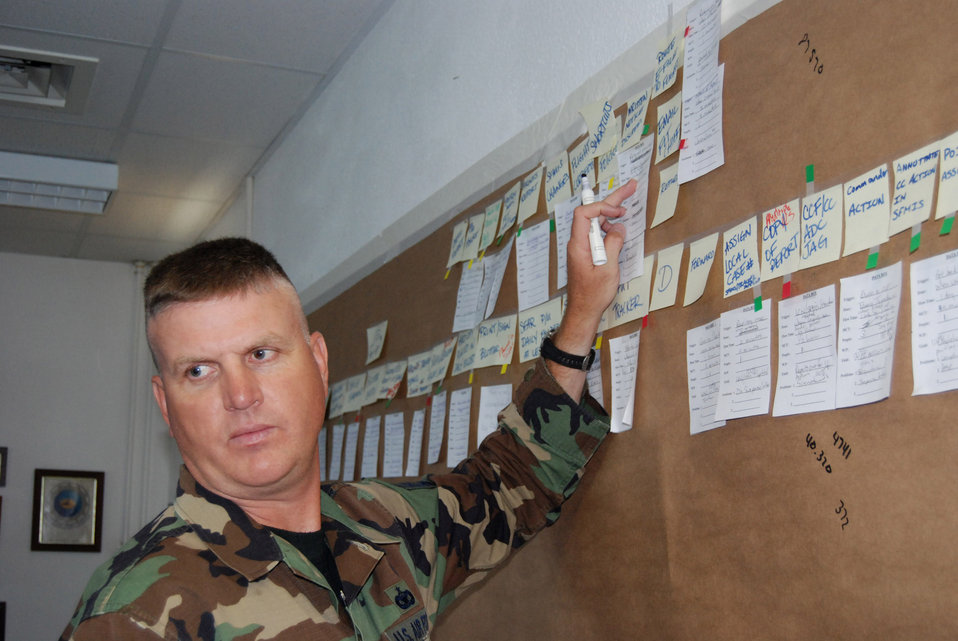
Spangdahlem cops streamline traffic ticket processing

Master Sgt. Todd Nappe reviews the process for handling traffic citations June 13 at Spangdahlem Air Base, Germany. By using Air Force Smart Operations for the 21st Century, or AFSO21, Airmen in the 52nd Security Forces Squadron are working to streamline the way tickets are processsed.